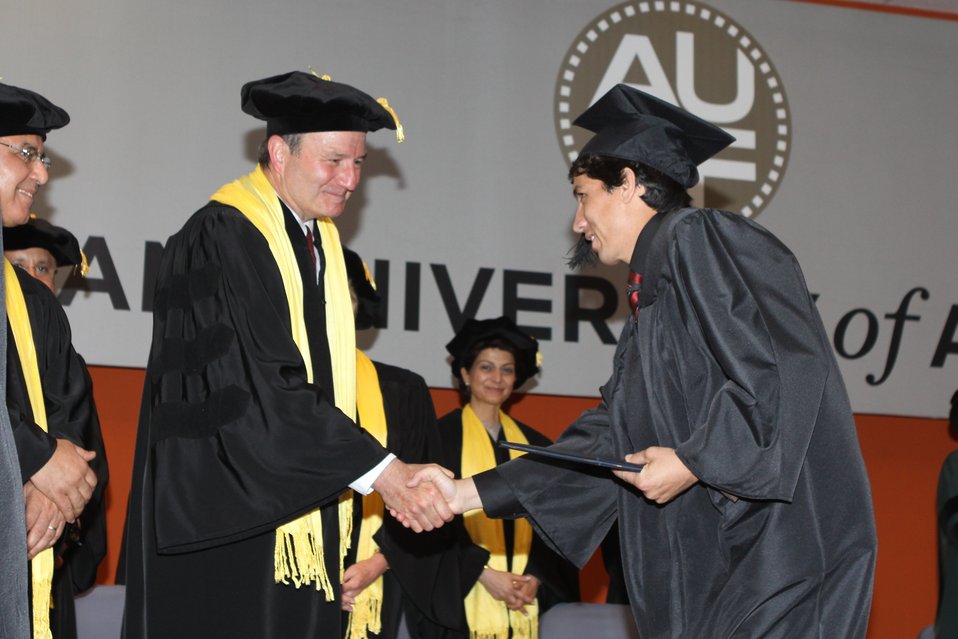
100526 AUAF Graduation 283